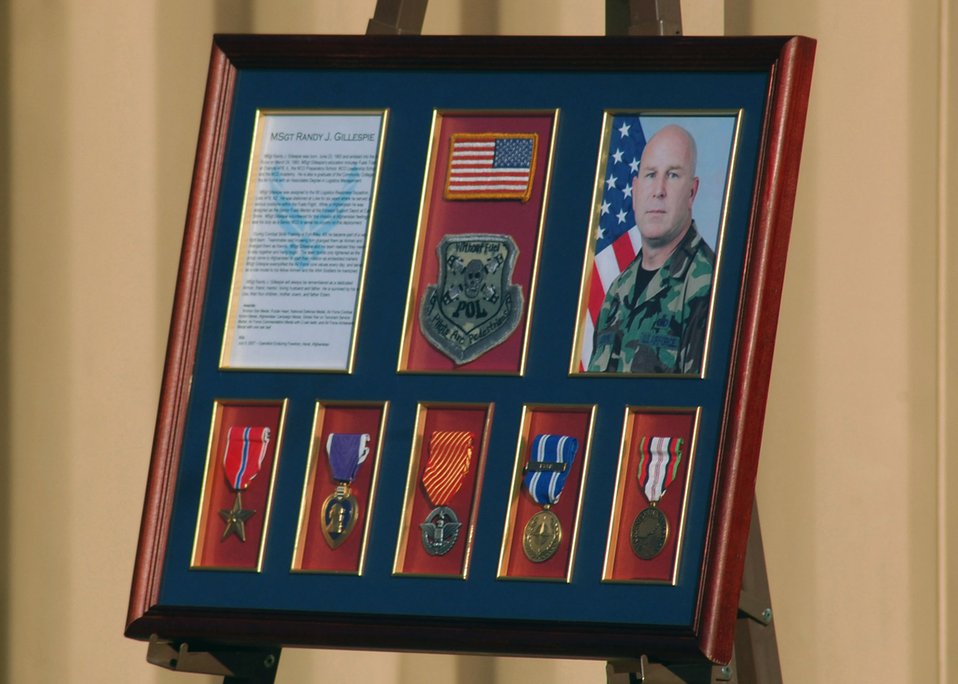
Camp Eggers officials dedicate building to fallen Airman

A plaque displaying Master Sgt. Randy Gillespie's biography and awards is unveiled during a dedication ceremony March 2 and will be placed in the hallway of the newly named Gillespie House at Camp Eggers, Afghanistan. Sergeant Gillespie was killed in action in July 2007 while serving as an embedded training team senior mentor with the Afghan national army 207th Corps in Herat.